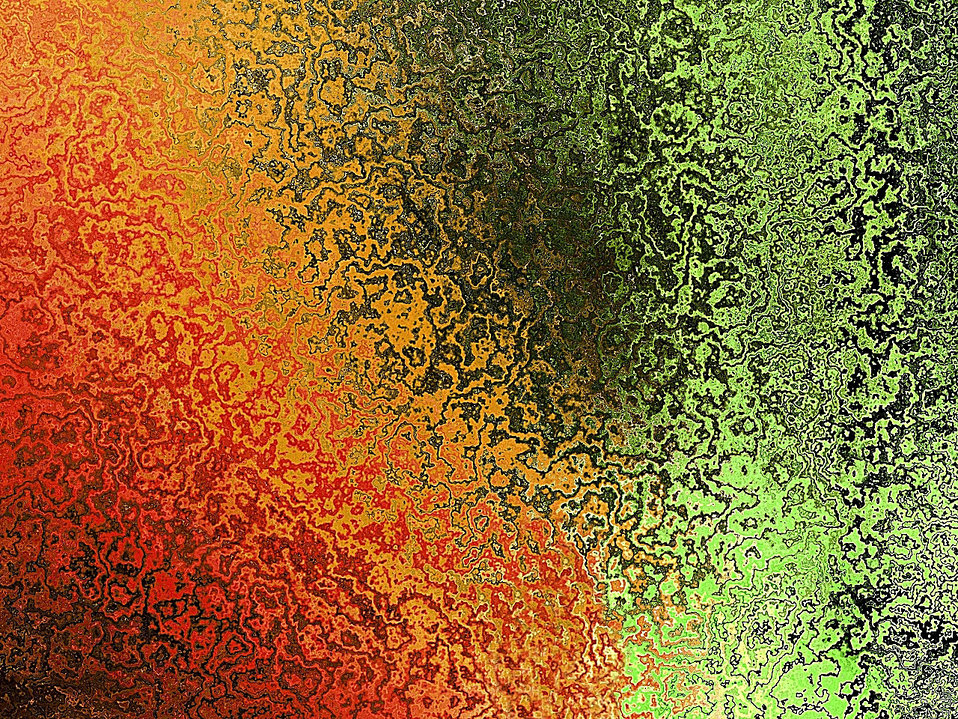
Background

Digital background.